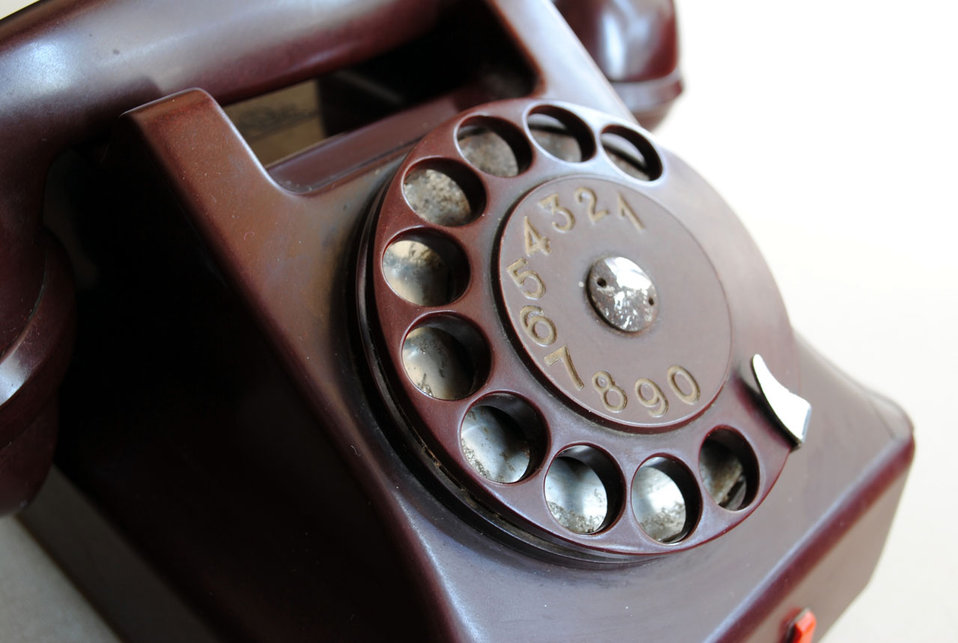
Closer to old phone

Let's look a little bit closer - really old.